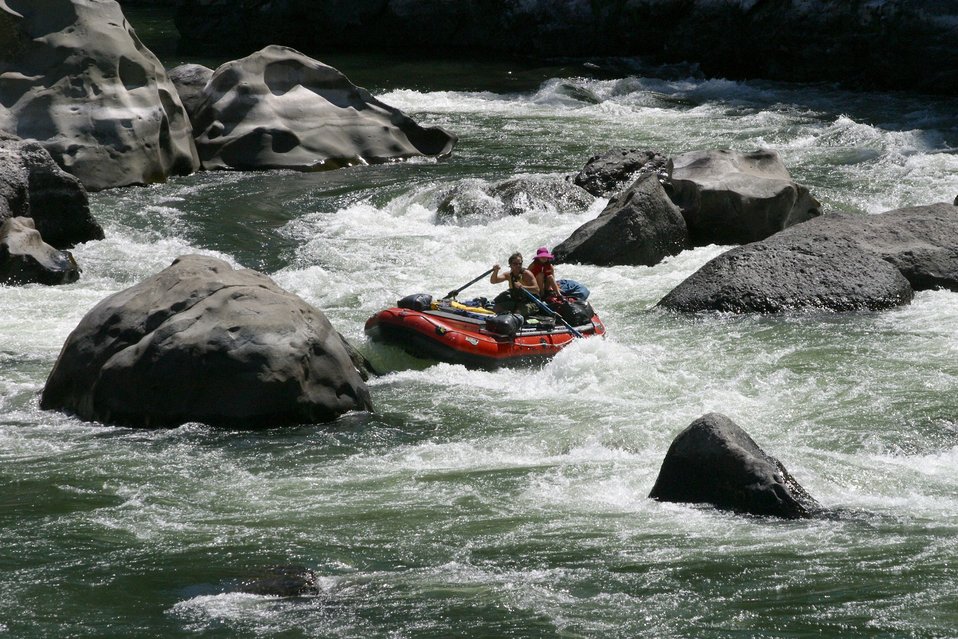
Boaters negotiate Blossom Rapids.